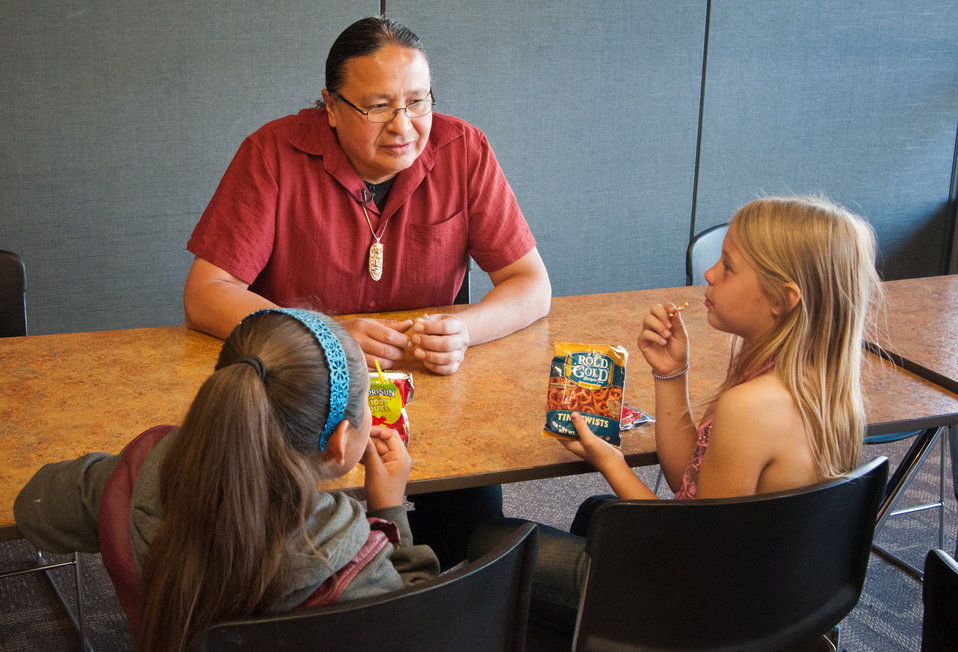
(L to R) Sarafina Chackee, Interim CPO Bruce LeClaire and Deandra Shideler enjoy a snack at the Boys and Girls Club of the Southern Ute Indian Tribe in Ignacio, CO on Thursday, Jun. 13, 2013. The U.S. Department of Agriculture’s (USDA) Food and Nutrition Service (FNS) assists the club with healthy snacks while the children are participating in programs at the Southern Ute Community Center.